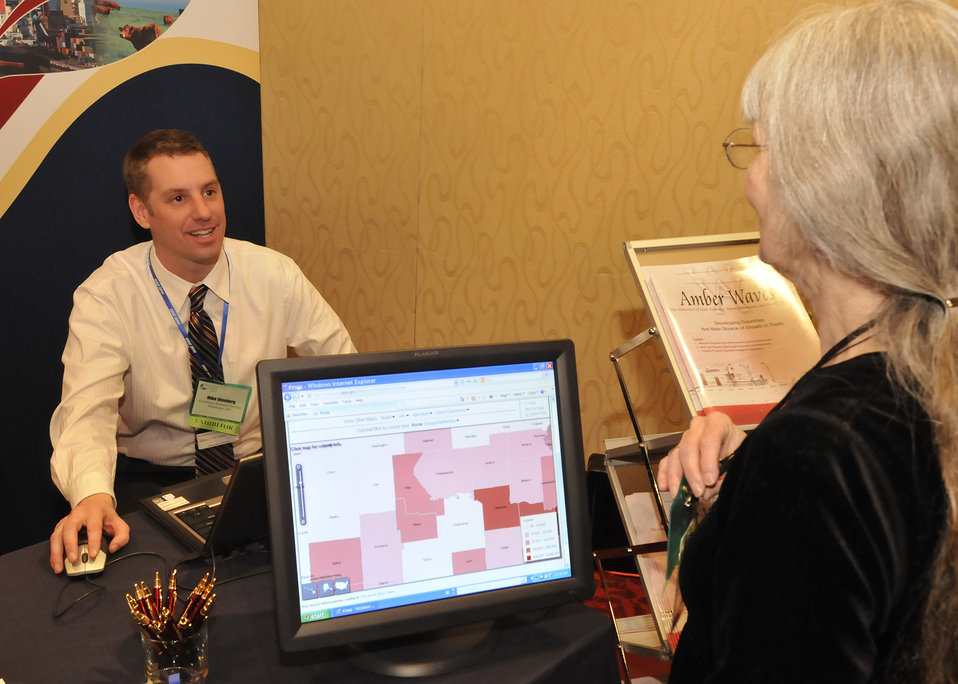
Mike Illenberg of the Economic Research Service (ERS) and a USDA exhibitors at the World Agricultural Outlook Board (WAOB) Forum in the Exhibit Hall of the Crystal City Marriott in Arlington, VA, on Thursday, February 24, 2011. Explains ERS documentation to an attendee at the Forum.